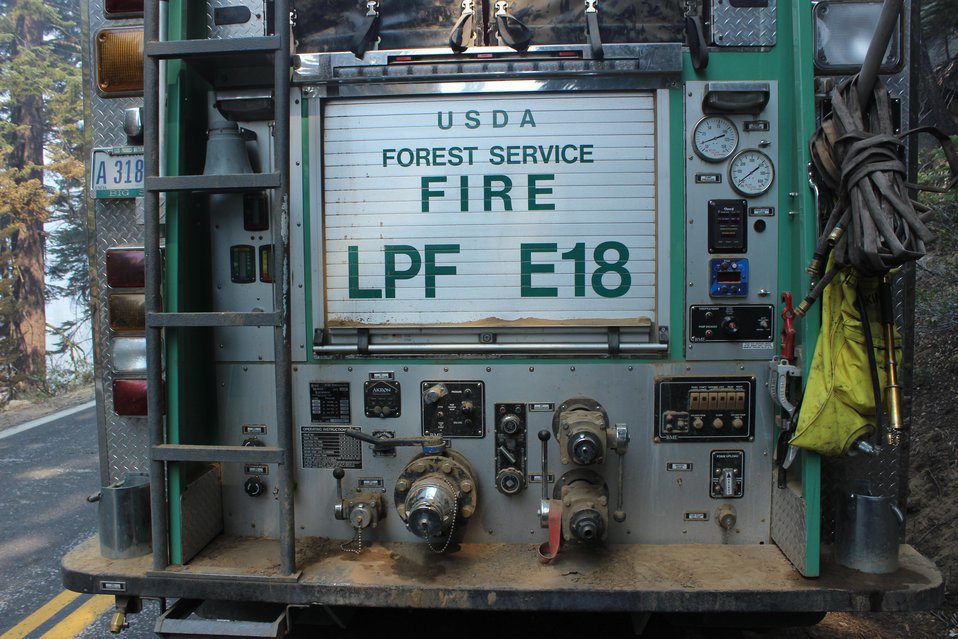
The back of Los Padres Fire Engine 18 stands near fire line at the Rim Fire. The Rim Fire in the Stanislaus National Forest near in California began on Aug. 17, 2013 and is under investigation. The fire has consumed approximately 253,332 acres and is 80% contained.